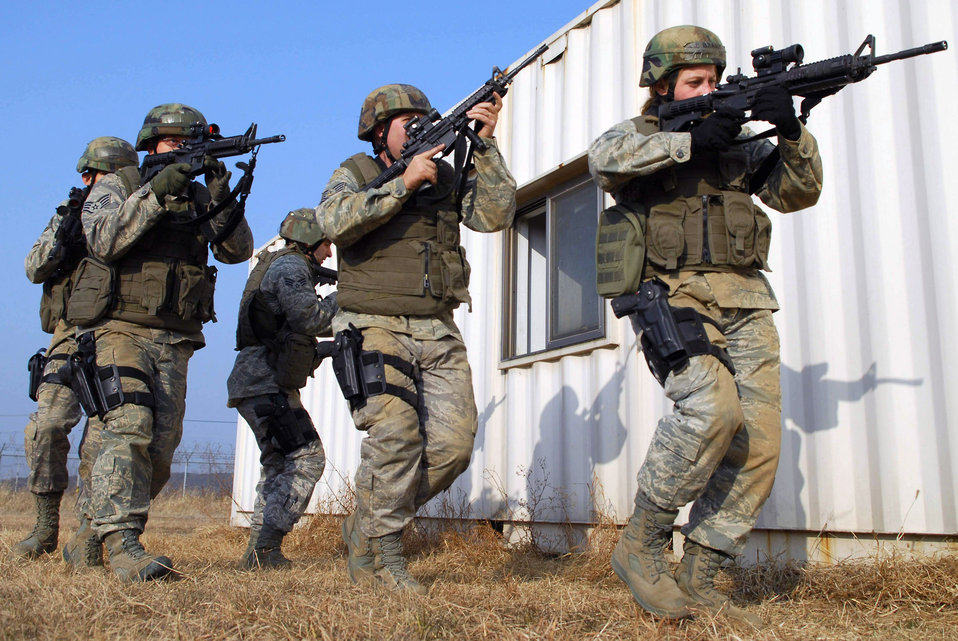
Osan Airmen train to fight

Airmen of the 51st Security Forces Squadron train on how to operate and survive in a war environment during the base's combat readiness course Jan. 22 at Osan Air Base, South Korea.